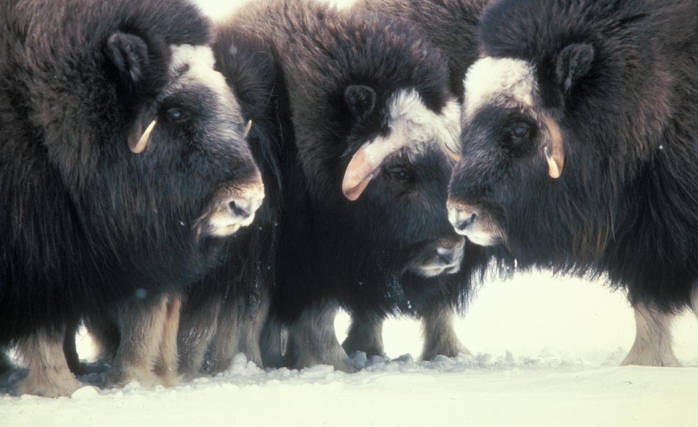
Muskox Up Close on Nunivak Island